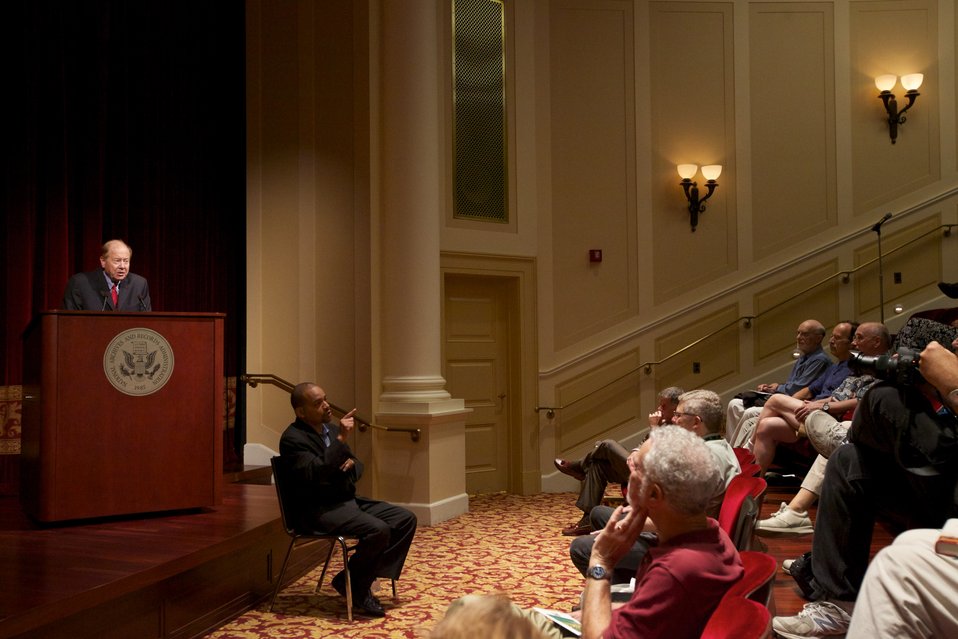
Revolutionary Summer; Joseph Ellis, author, discusses his book Revolutionary Summer: The Birth of American Independence